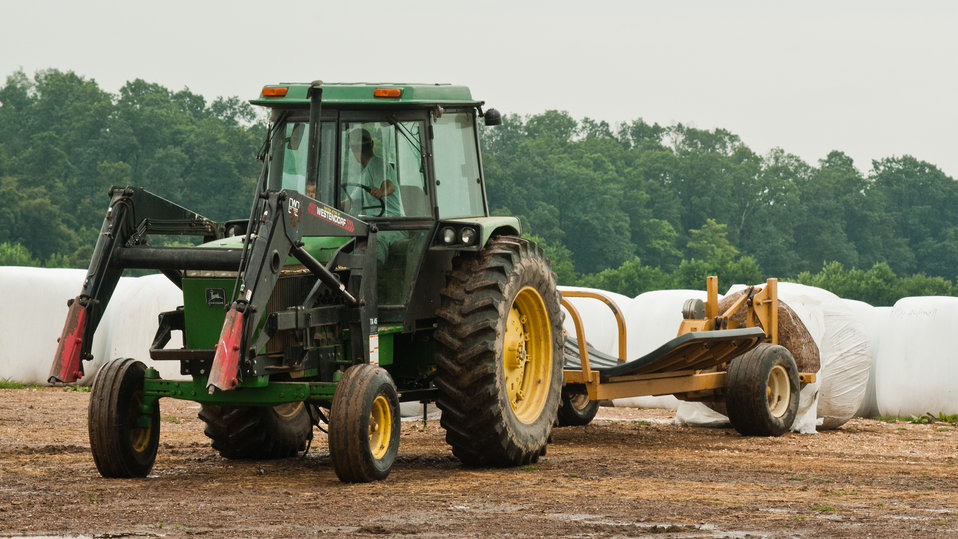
Farm Assistant George Kloph uses a tractor and silage bale spreader to lift and feed the herds of Black Angus cattle at Nick’s Organic Farm, owned by Nick Maravell, in Adamstown, MD on Friday, July 12, 2013. The white plastic wrapped bales of pasture grass and alfalfa have been fermenting for months to create sweet silage that stores well and can be used to feed cattle at varying amount all year long. The fermentation process sweetens the taste and increases the vitamin levels in it. The farm produces Black Angus beef, chicken, turkey, eggs, hay, soybeans, corn, alfalfa, orchard grass, rye; and other crops. The cattle are 100% grass-fed receiving certified organic pasture, certified organic hay (in winter), water and mineral salts mixed with sea kelp. The cattle are not fed hormones, antibiotics or animal products. Poultry feed from grain is ground from organic grain. The poultry also graze on organic pastures. The farm has conducted on-farm research with federal, state and non-profit agencies to refine organic practices. An organization such as the U.S. Department of Agriculture (USDA) Agricultural Research Service (ARS) center in Beltsville has been able to conduct research to improve organic crops and to breed and manage the cattle so that they have.